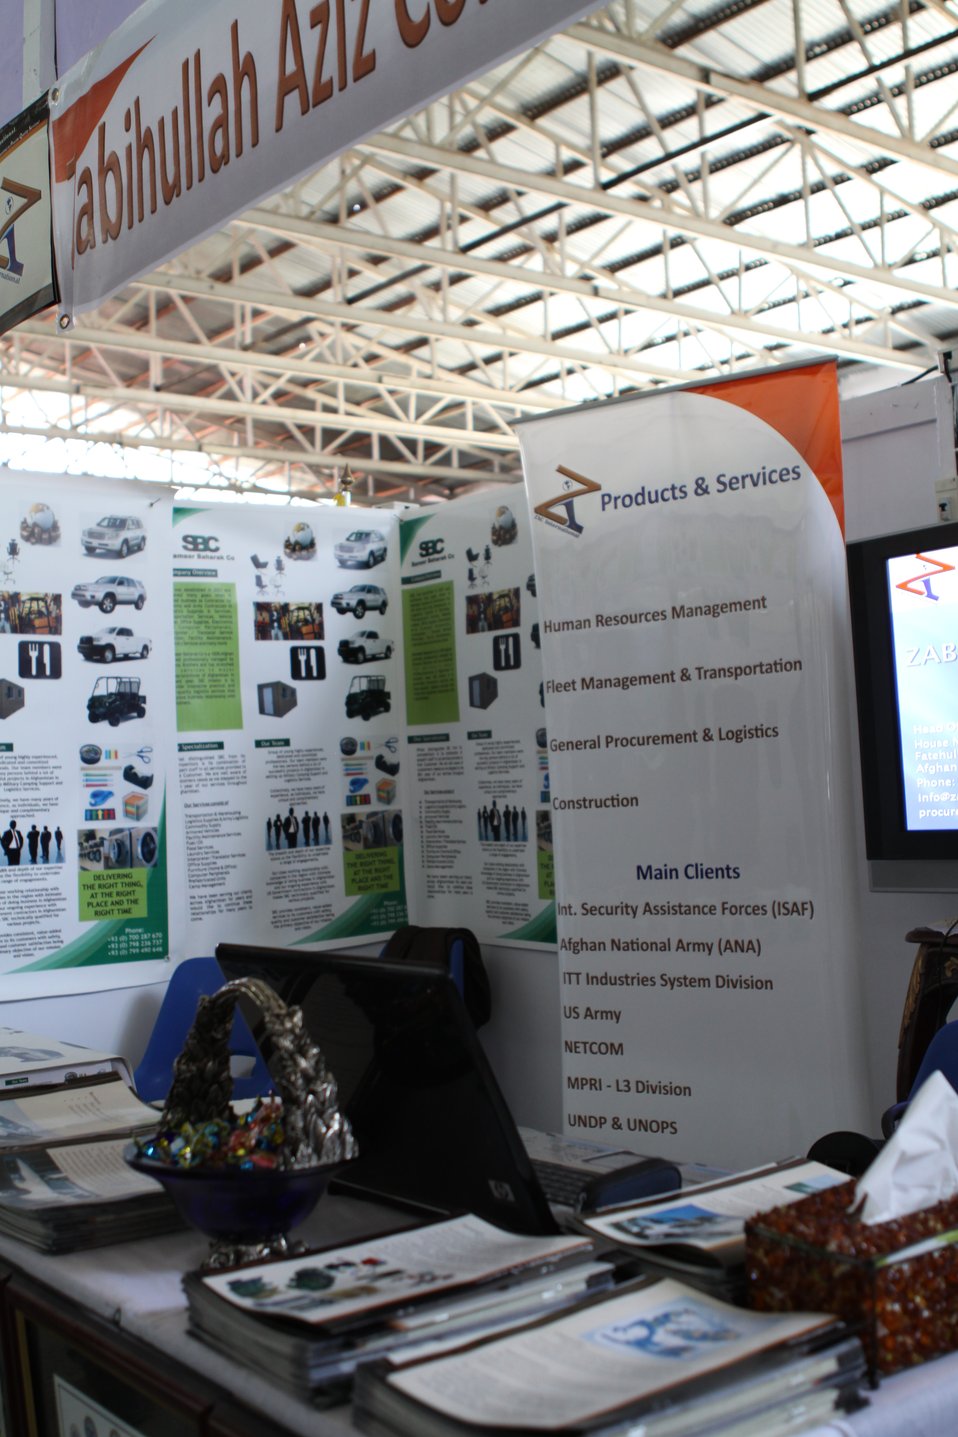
100522 ATVI Graduation 081